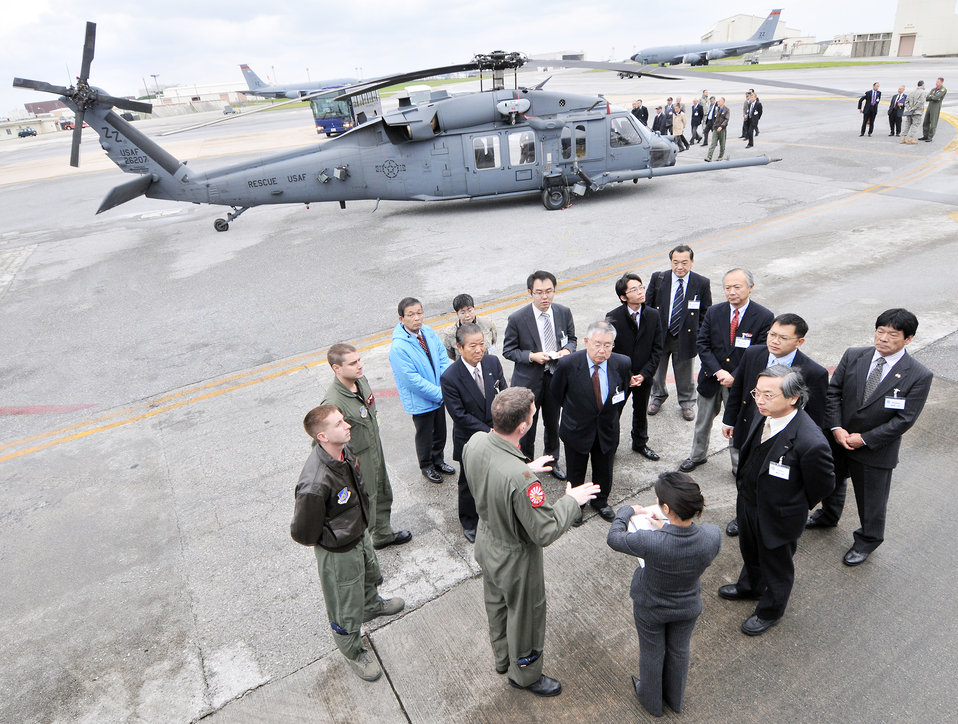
Japanese civic leaders get a taste of Kadena mission

Brig. Gen. Ken Wilsbach and Japanese civic leaders were given the opportunity to speak to aircrew about their respective aircraft during a base tour Feb. 19, 2010, at Kadena Air Base, Japan. General Wilsbach is the commander of the 18th Wing.